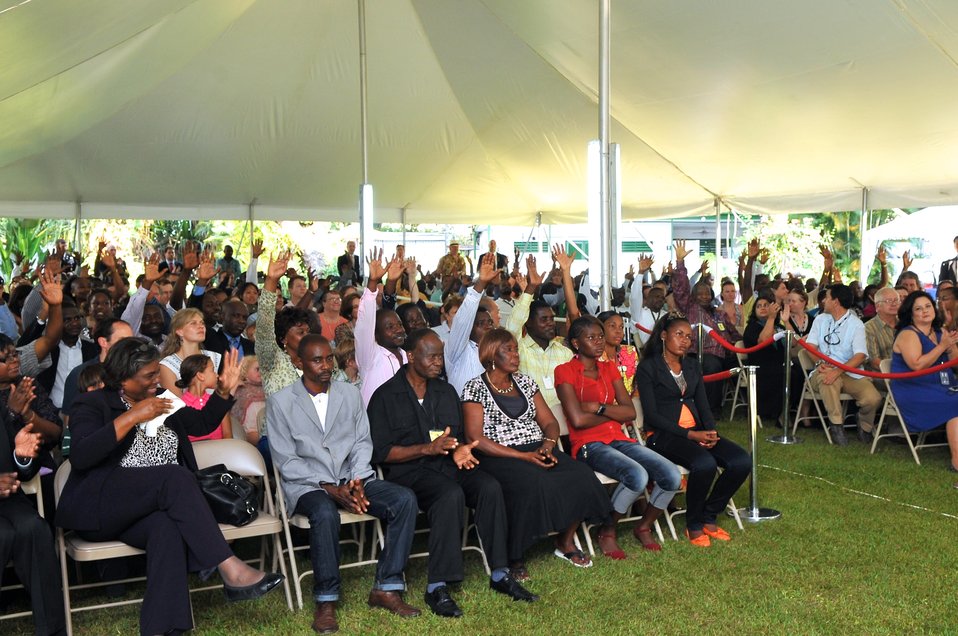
Locally Hired Staff at Embassy Kinshasa Receive Salute from Secretary Kerry

Locally hired staff raise their hands as U.S. Secretary of State John Kerry singles them out for thanks while addressing employees of Embassy Kinshasa during a visit to the Democratic Republic of Congo on May 3, 2014.